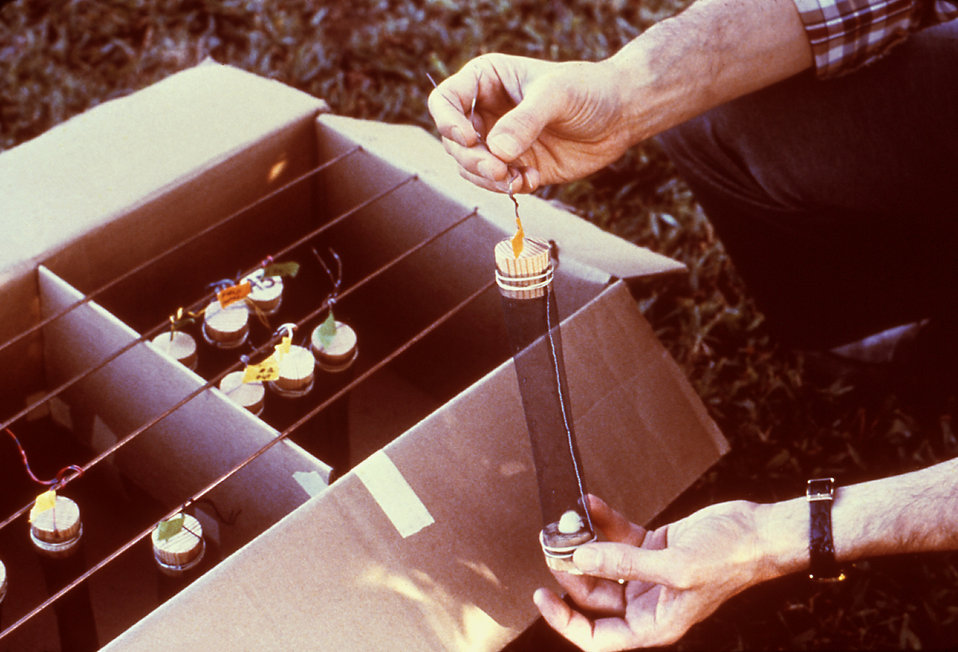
This 1981 photograph depicts a cardboard box being loaded with fresh 'mini' bioassay cages that were taken to be used in a field tests in which endemic mosquitoes were collected to be counted, and analyzed by further testing.